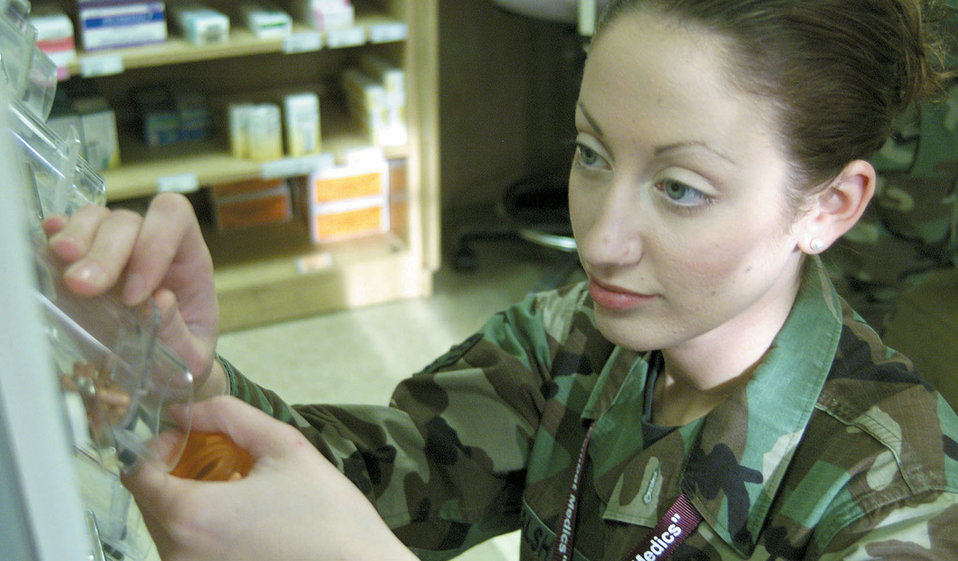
Indispensable professionals

SPANGDAHLEM AIR BASE, Germany -- Senior Airman Kate Walsh uses an automated dispensing system to fill a prescription. National Pharmacy Week is Oct. 19 to 25. The week was established by the American Pharmacy Association in 1925 to help educate consumers about the valuable role pharmacy professionals perform in health care. Since then, it has evolved to educate patients on how they can more safely and effectively use their medications. Walsh is a pharmacy technician here with the 52nd Medical Group.